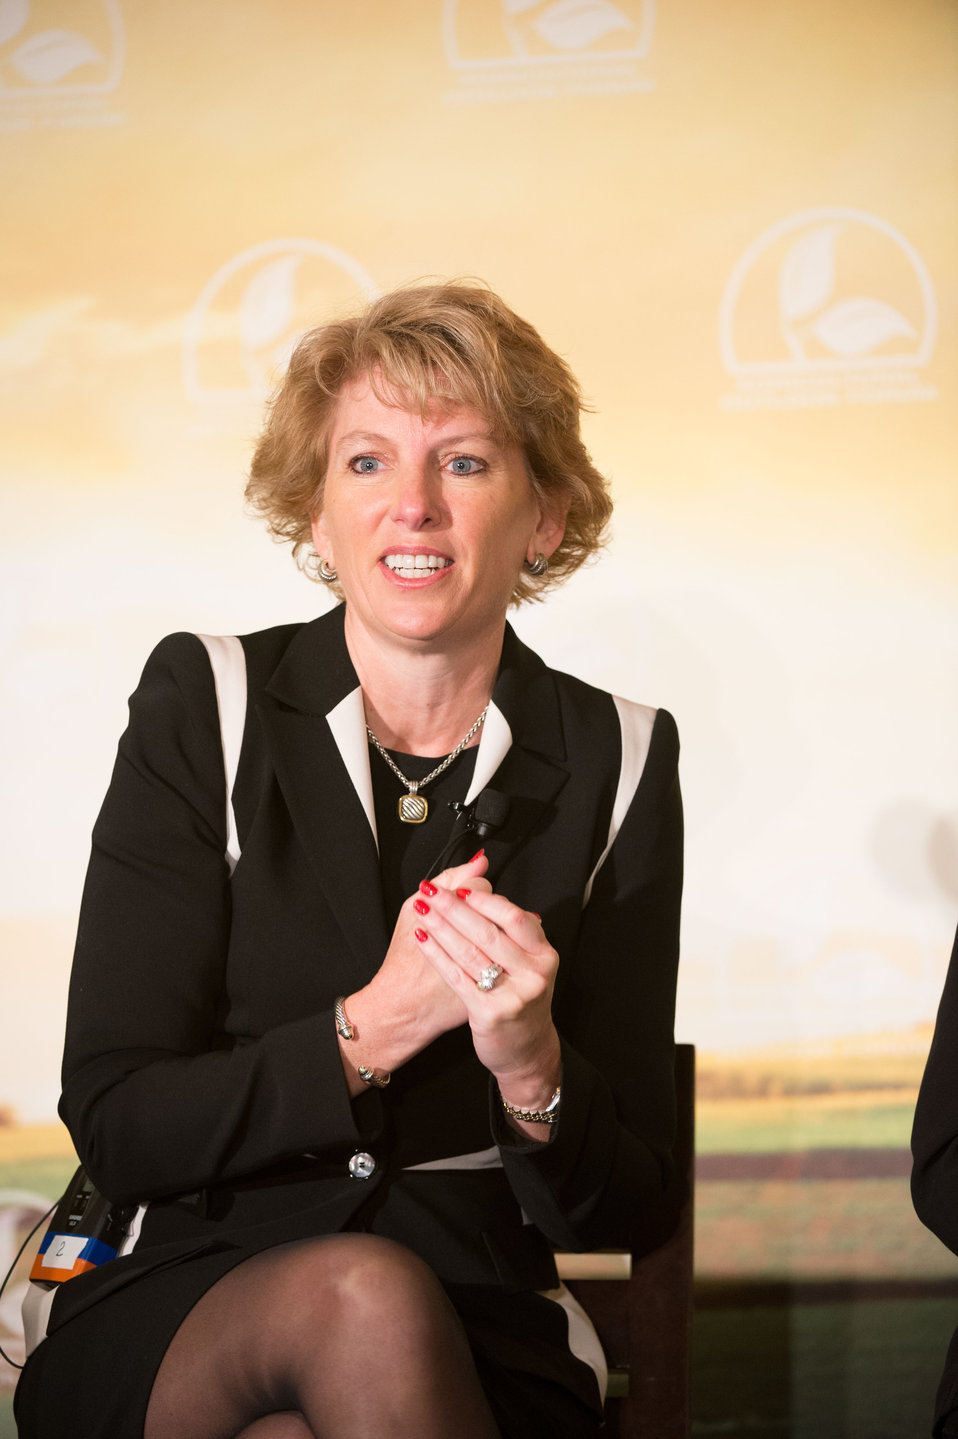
Building Markets Here and Abroad panelist Produce Marketing Association President Cathy Burns at the 2014 Agricultural Outlook Forum in Arlington, VA., on Thursday, Feb. 20, 2014. The U.S. Department of Agriculture's (USDA) annual Agricultural Outlook Forum brings together the agricultural community to discuss policy, trade, science, rural development, and the economic outlook for the coming year. The Forum also focuses on forestry, health and nutrition issues, and the changing dynamics and face of rural America.USDA photo by Bob Nichols.